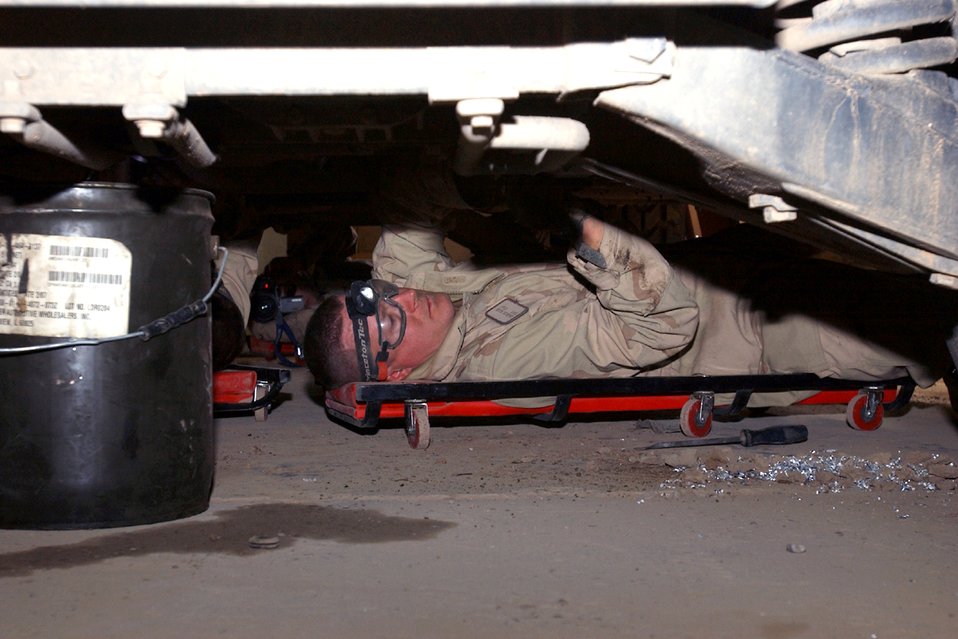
Armoring up

KIRKUK AIR BASE, Iraq -- Tech. Sgt. Brian Morris attaches bands to secure new armor being installed on a Humvee here. Sergeant Morris is part of a U.S. Central Command Air Forces